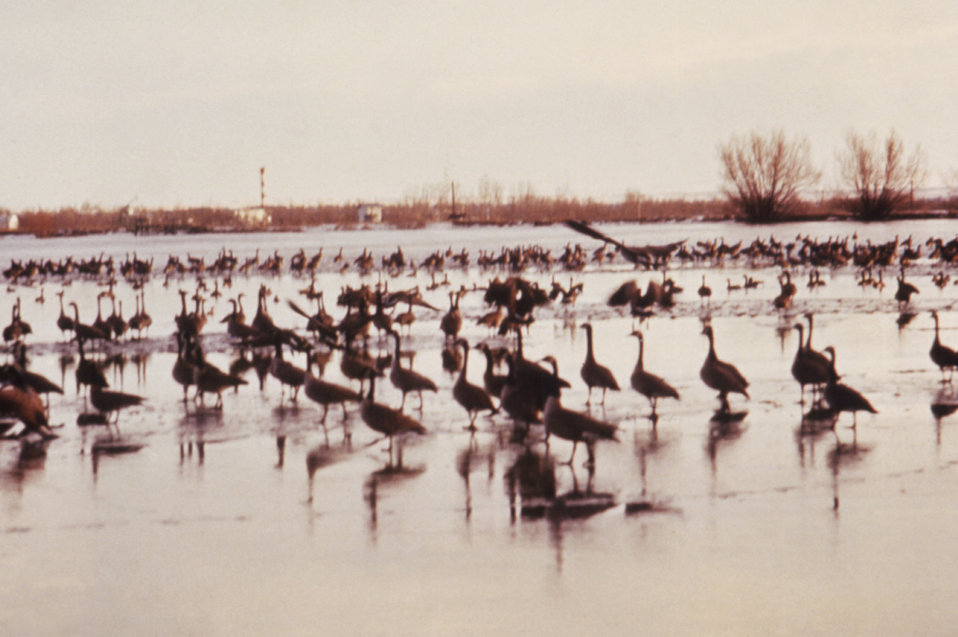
This 1976 image shows numerous Canadian geese that had landed on College Lake in Colorado during an investigation by the CDC.